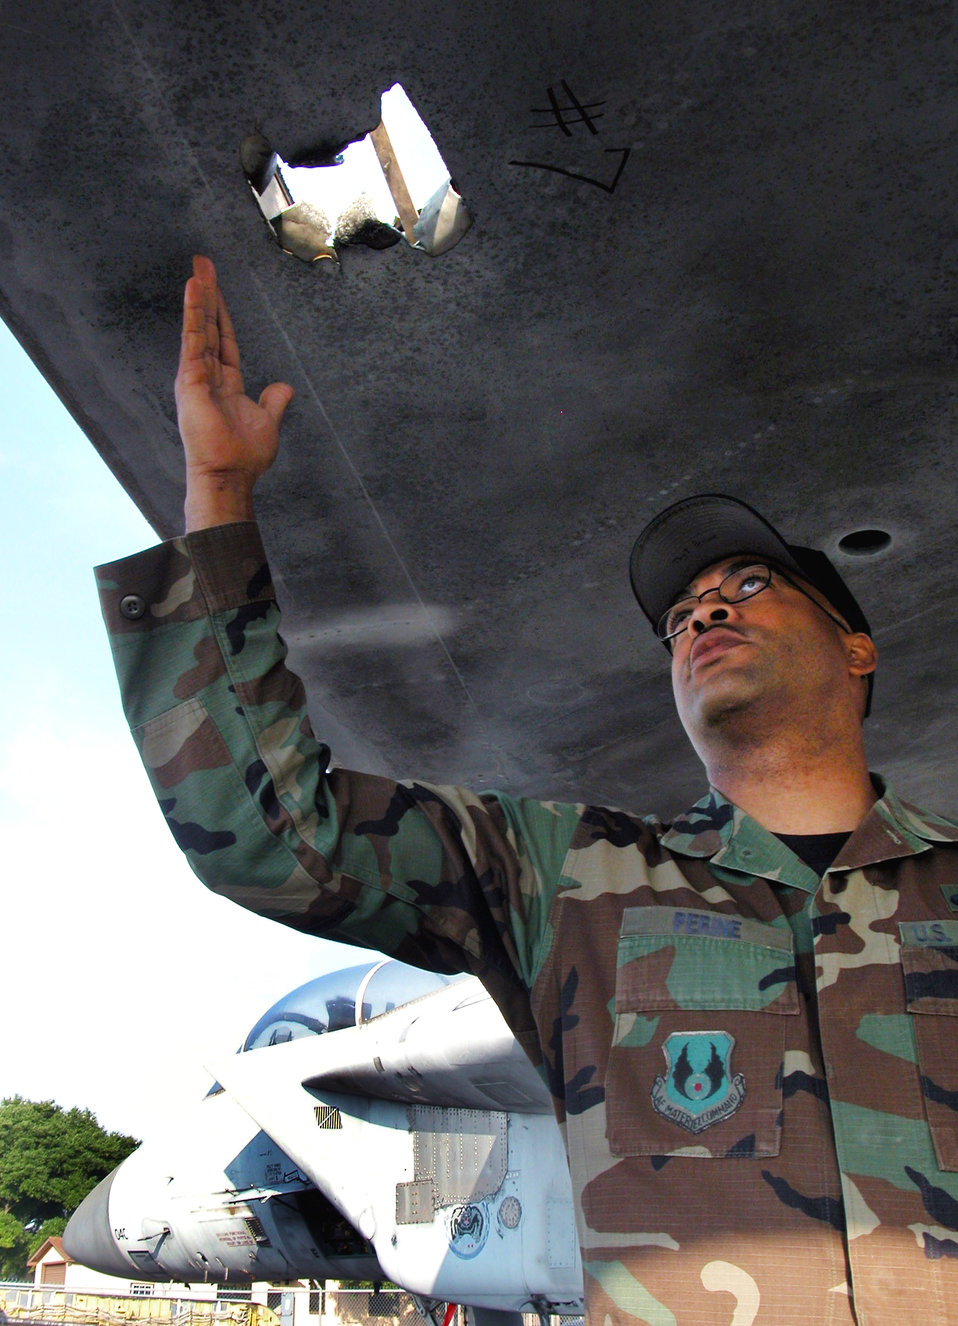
Battle damage training

ROBINS AIR FORCE BASE, Ga. -- Aircraft battle damage repair instructor Tech. Sgt. Dennis Perine, with the 653rd Combat Logistics Support Squadron, accesses the simulated damage to an F-15 Eagle from a piercing projectile that is used for training.